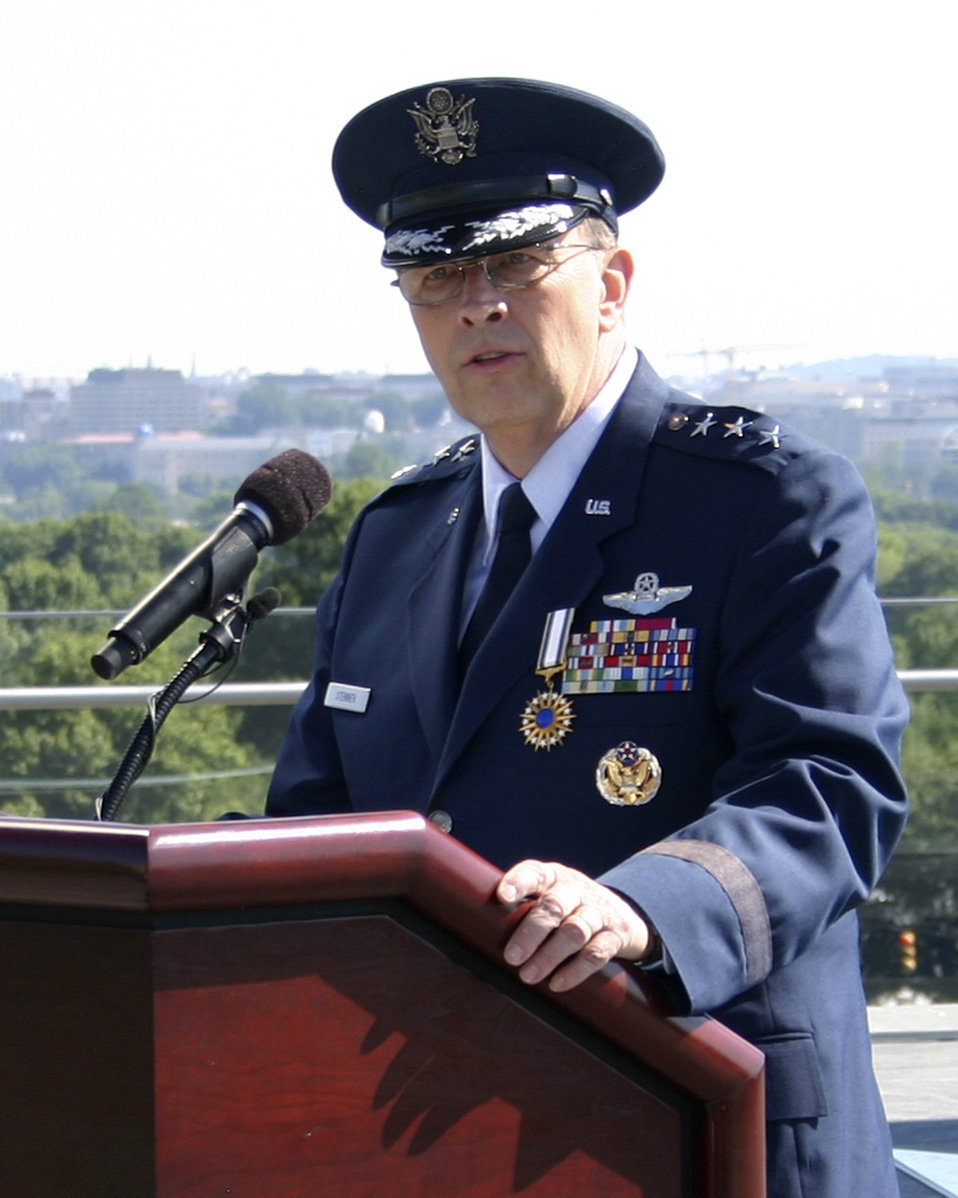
Stenner takes reins of Air Force Reserve

Chief of Air Force Reserve Command, Lt. Gen. Charles E. Stenner Jr. addresses the audience after assuming command. General Stenner assumed command during a ceremony at the Air Force Memorial in Arlington, Va., June 24.